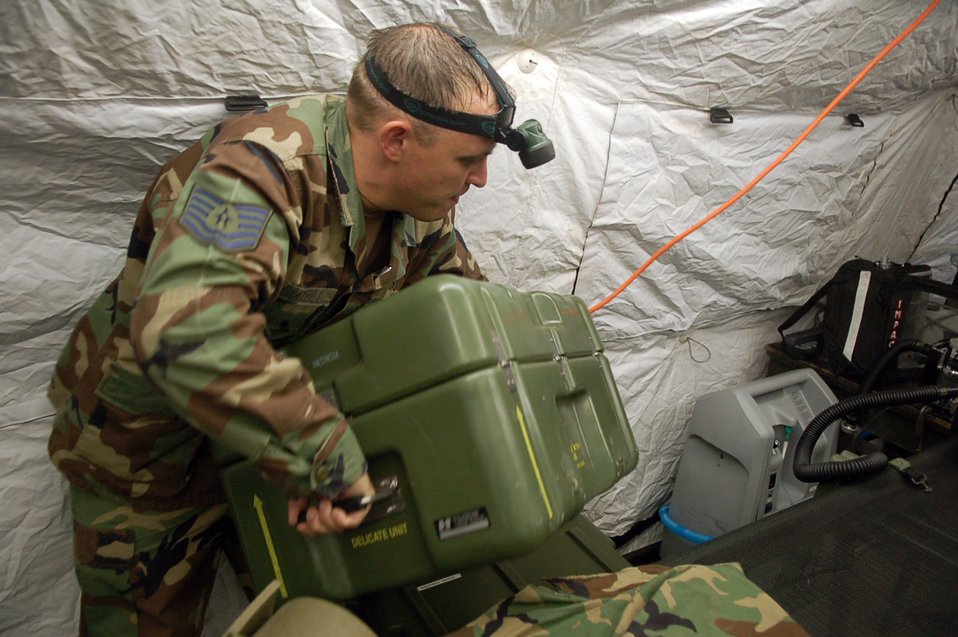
Mobile surgical team trains under cover of darkness

Tech. Sgt. Bruce Graybill carries a heavy case filled with medical equipment while setting up a mobile surgical tent in an empty field at Soto Cano Air Base, Honduras, Oct. 18. The Joint Task Force-Bravo Medical Element Mobile Surgical Team team built up the operating room at night to practice setting up in limited visibility. Sergeant Graybill is NCO in charge of the team.